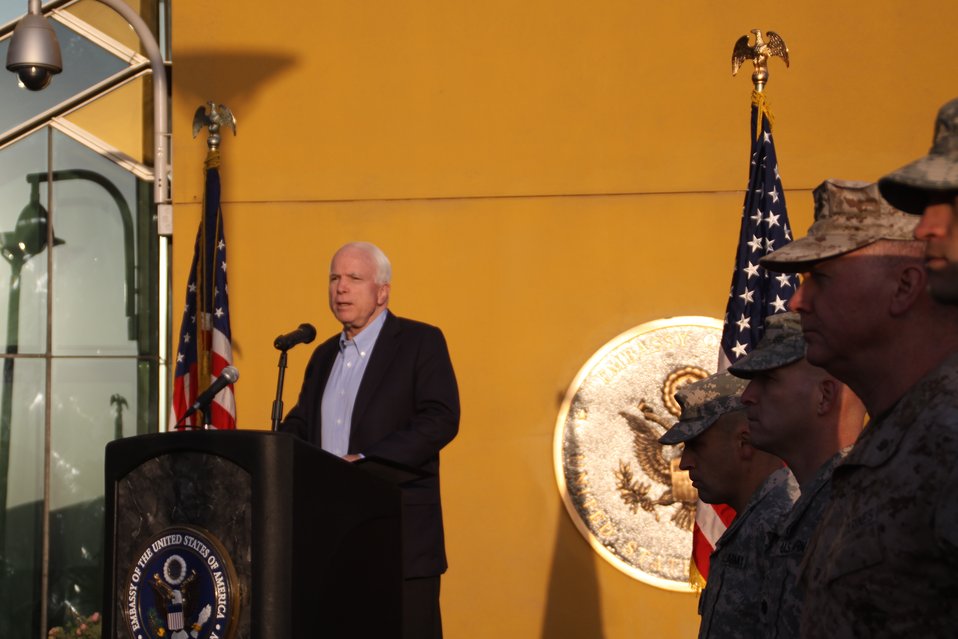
Senator McCain